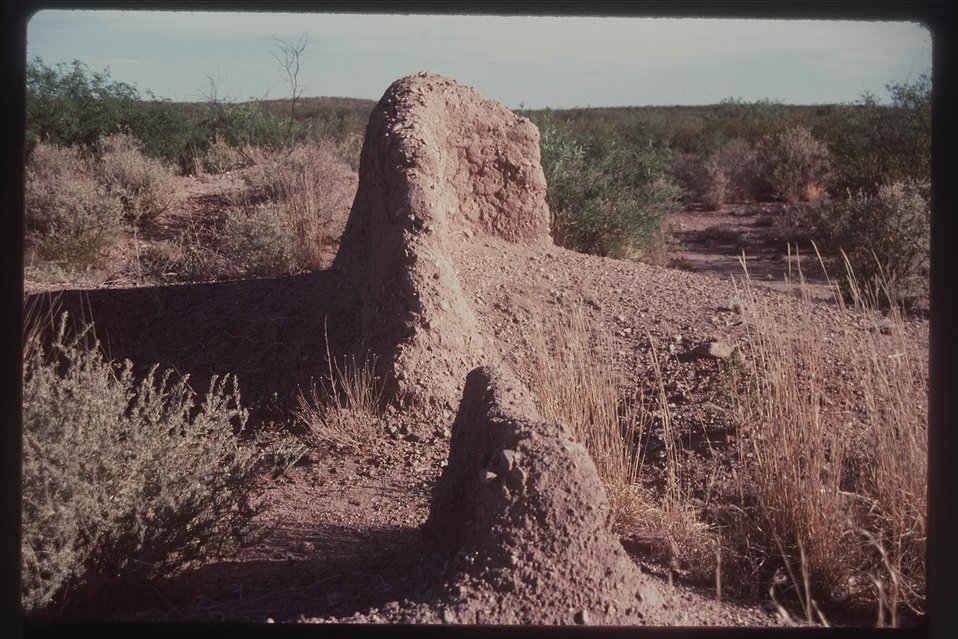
Either odd rock formations or some kind of ruins in the San Pedro Riparian National Conservation Area.